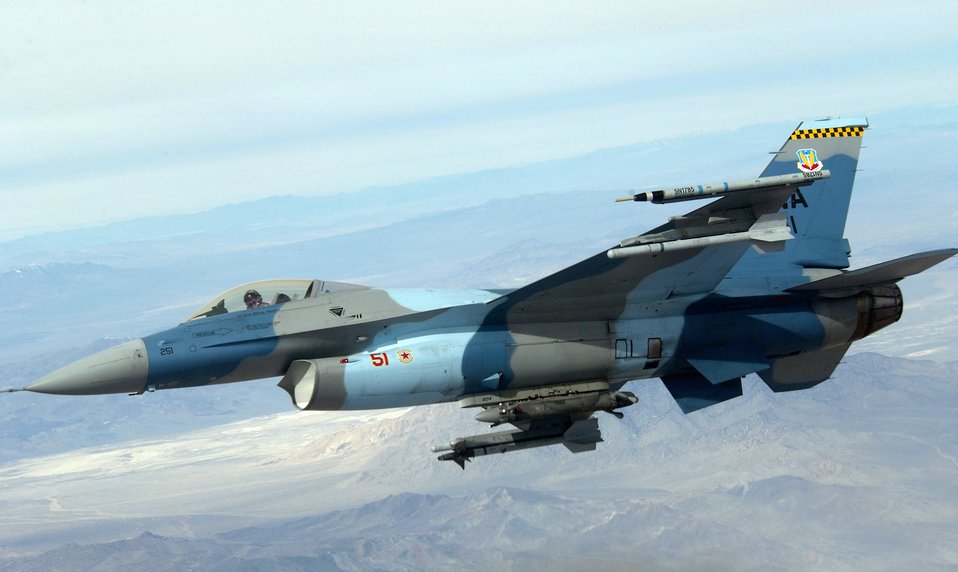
Red Flag 06-1

NELLIS AIR FORCE BASE, Nev. (AFPN) -- An F-16 Fighting Falcon heads out to a range Jan. 31 during Red Flag 06-1 being held here Jan. 21 through Feb. 18. Red Flag tests aircrews' war-fighting skills in realistic combat situations. Aircraft fly missions day and night at the nearby Nevada Test and Training Range simulating an air war. Along with the Air Force, units from the Army, Navy, Marine Corps, United Kingdom and Australia are participating. The F-16 is with the 64th Aggressor Squadron.